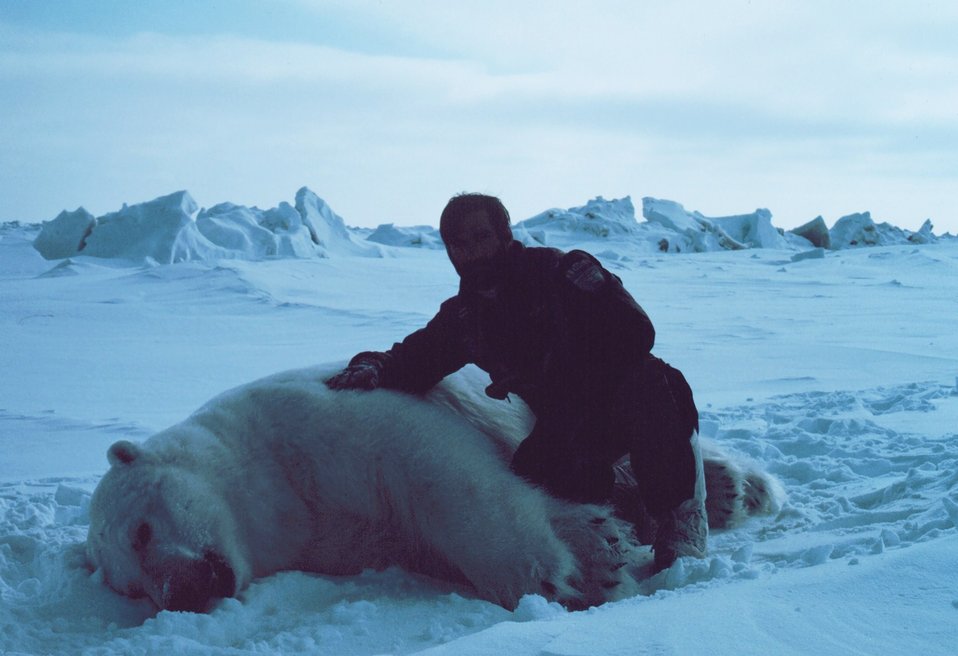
Budd Christman with large sedated polar bear - Ursus maritimus. Bears were measured and tagged for future study.